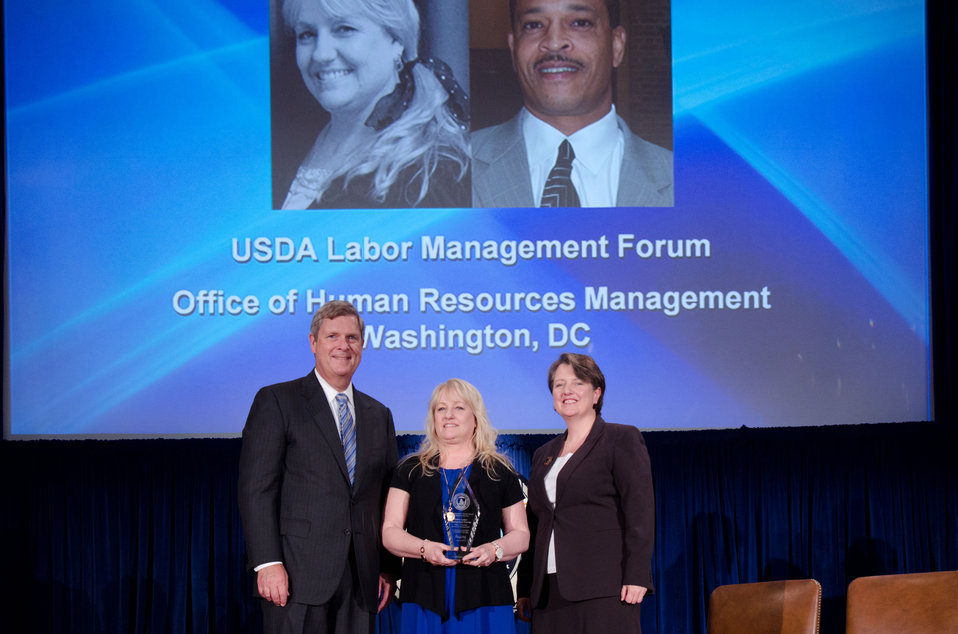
Agriculture Secretary Tom Vilsack (l) and Deputy Secretary Kathleen Merrigan (r), presents the Award to USDA Labor Management Forum, Office of Human Resources Management, Washington, DC. Debra Arnold (Rural Development) and William P. Milton., Group Leaders. For outstanding service implementing Executive Order 153522, Creating labor-Management Forums to Improve Delivery of Government Services. On Wednesday, September 14, 2011 in the Jefferson Auditorium at the US Department of Agriculture in Washington, DC.